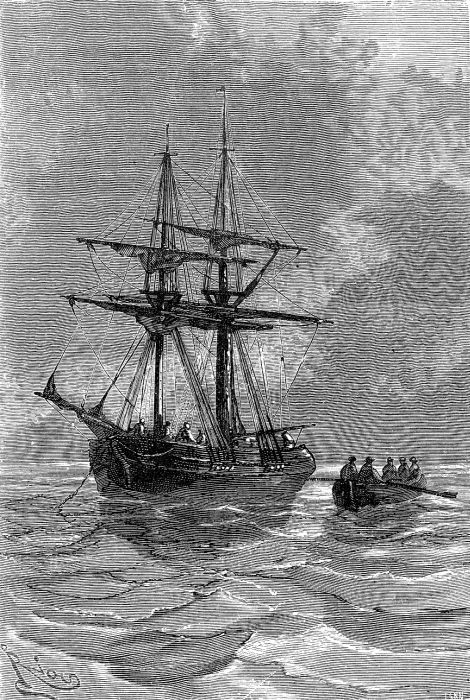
An ilustration from the novel 'In Search of the Castaways; or Captain Grant's Children' by Jules Verne drawn by Édouard Riou. Polski: Ilustracja powieści Juliusza Verne'a 'Dzieci kapitana Granta' autorstwa Édouarda Riou. Français : 'Les Enfants du capitaine Grant', Édouard Riou. Français : C’était un brick nommé le Macquarie.